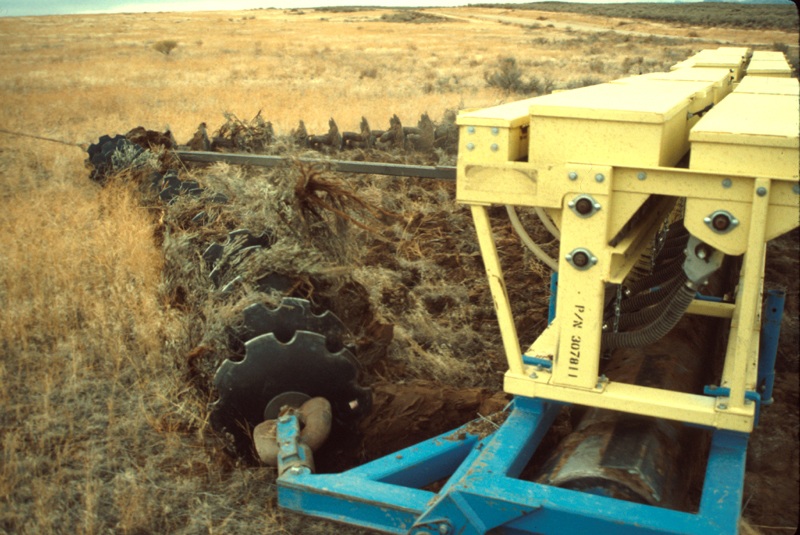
Unburned cheatgrass Range Restoration Project Lower Snake River District